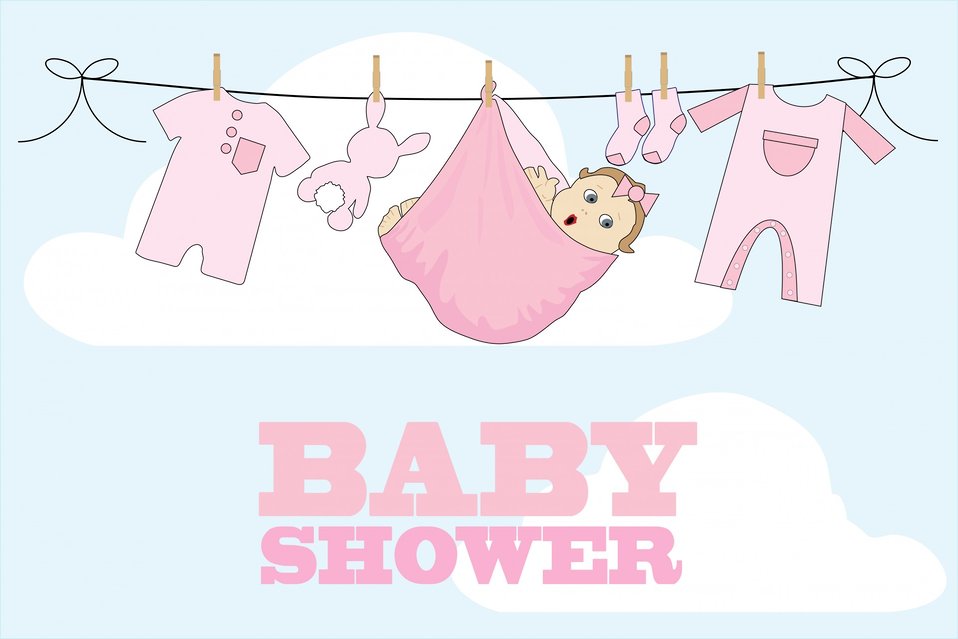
Baby shower card girl

Cute baby girl dangling from clothes washing line baby shower card template.